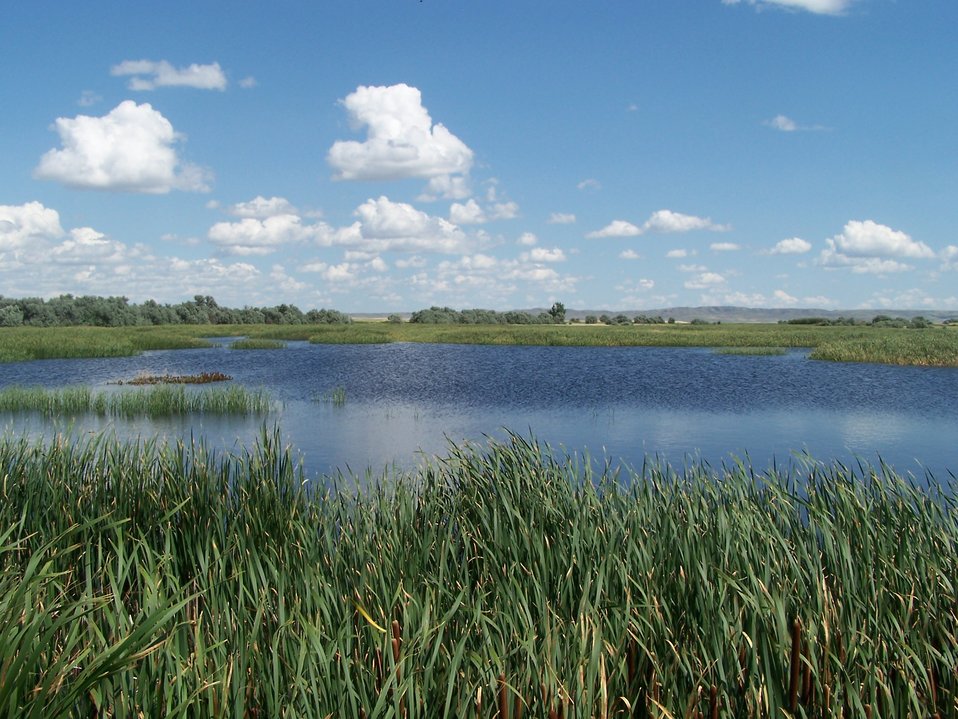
Pearce WPA - Bowdoin WMD

Wetland on Pearce Waterfowl Production Area, Bowdoin WMD